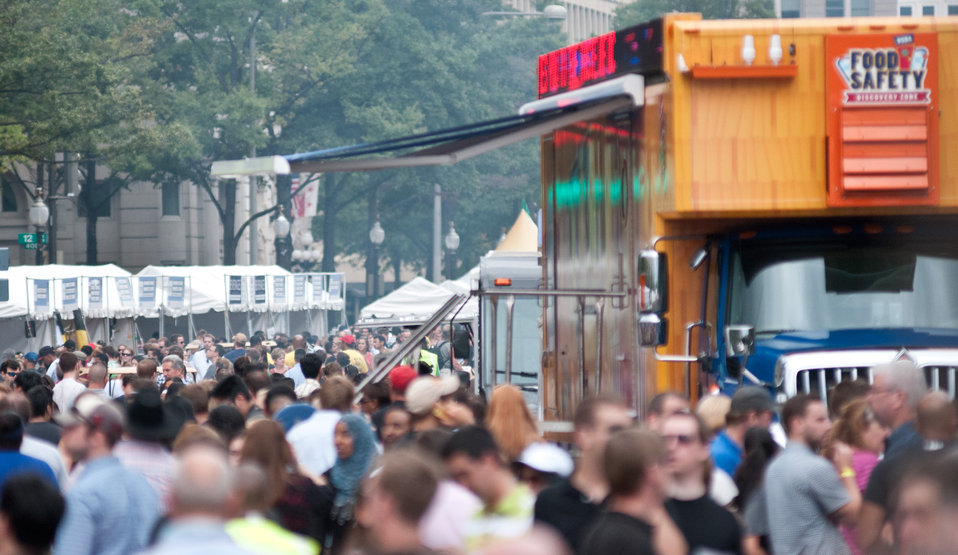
Agriculture’s mobile Discovery Zone is a hands-on vehicle that travels the nation educating children and parents about the four main principals of home food safety – clean, separate, cook and chill, at the Taste of D.C., event that highlights more than 70 eateries, 30 specialty beer providers, the United Service Organization (USO) Metropolitan Washington, and live bands. It is anticipated that more than 500,000 people will attend over the course of the three-day event, which extends from the White House to the Capitol, along Pennsylvania Ave. in Washington D.C. on Saturday, October 6, 2012. Agriculture Food Safety and Inspection Service specialists present talks and cooking demonstrations.